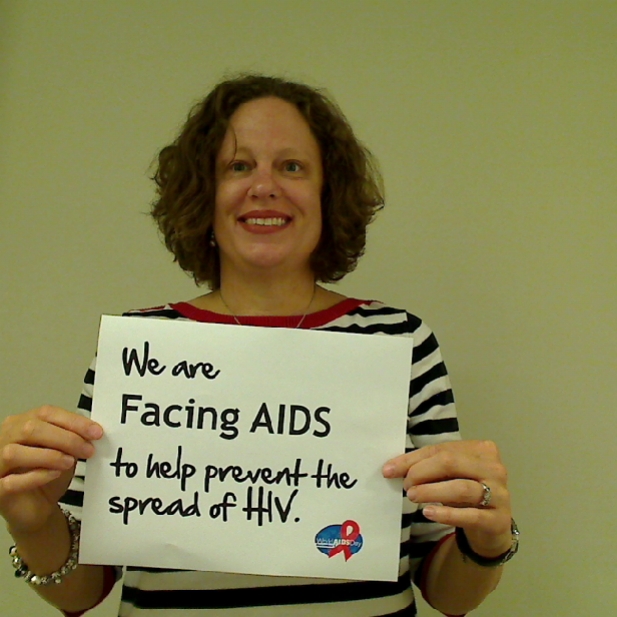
We are Facing AIDS to help prevent the spread of HIV.